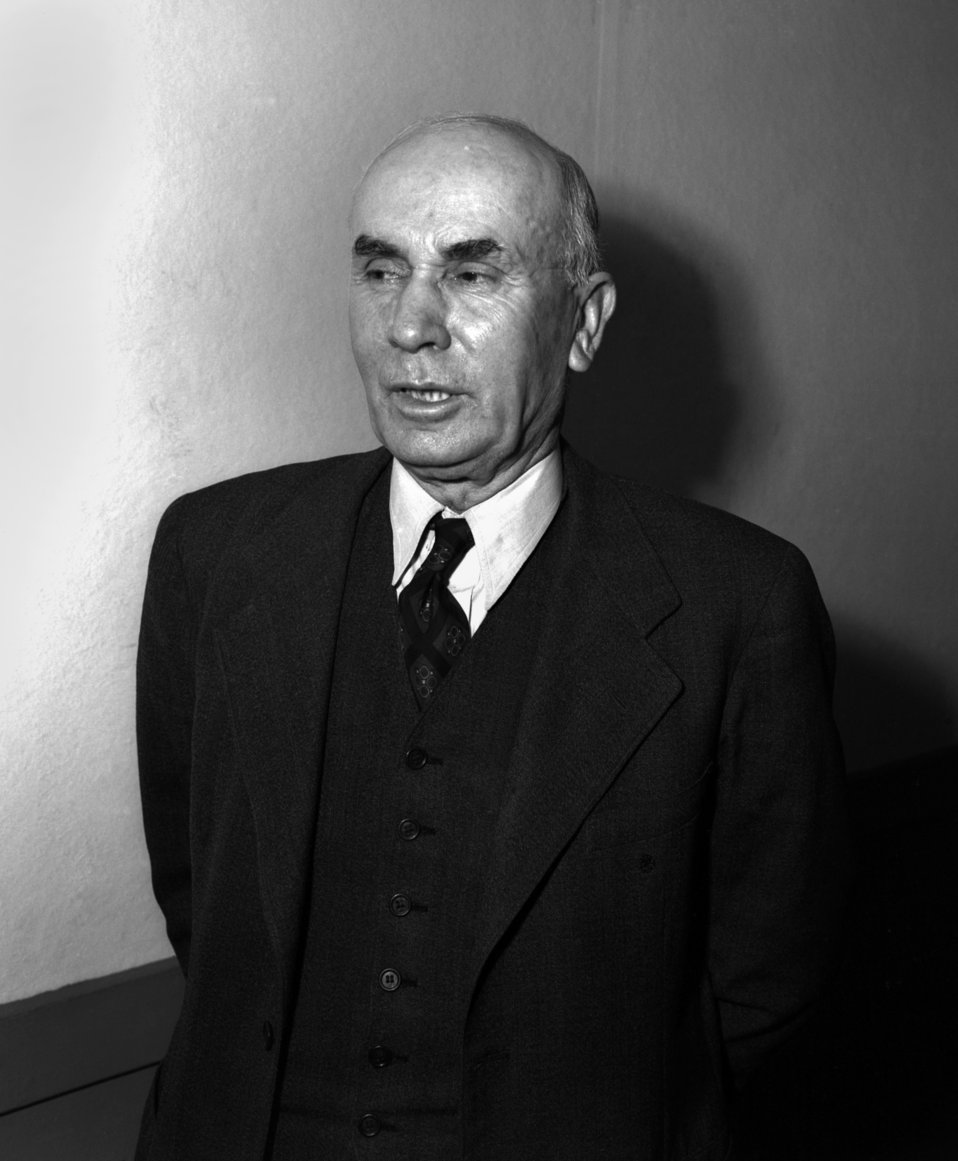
William Gallaher Oak Ridge

3272-1 DOE photo by Ed Westcott 1-31-1947 Oak Ridge Tennessee